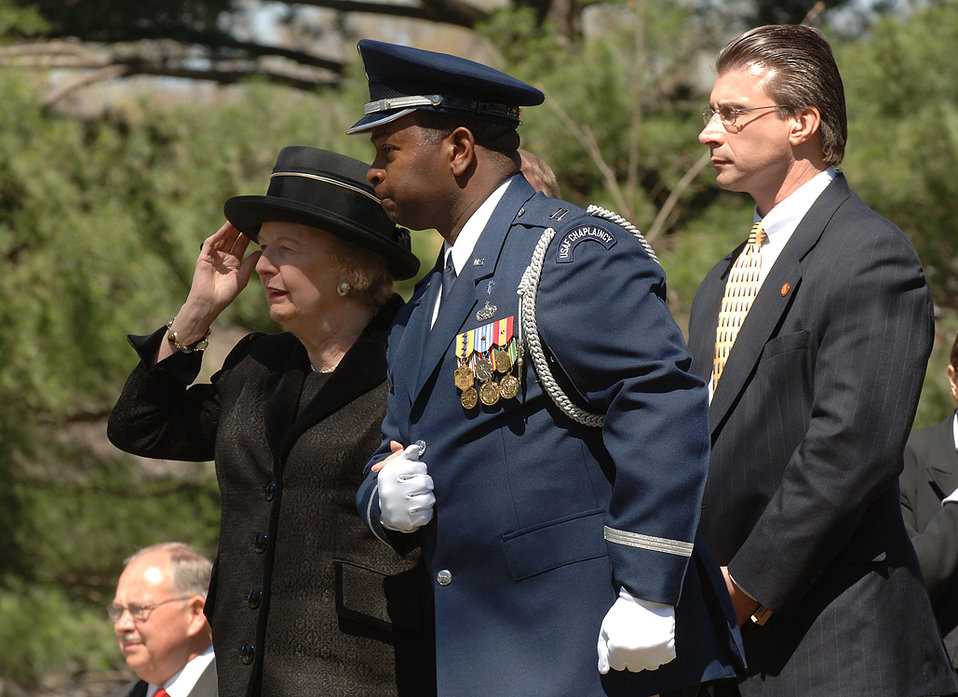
Weinberger tribute

Former United Kingdom Prime Minister Margaret Thatcher watches the arrival of former Secretary Caspar Weinbeger's casket during his funeral in Arlington National Cemetery, Arlington, Va., April 4, 2006. Secetary Donald H. Rumsfeld delivered remarks during the memorial service.